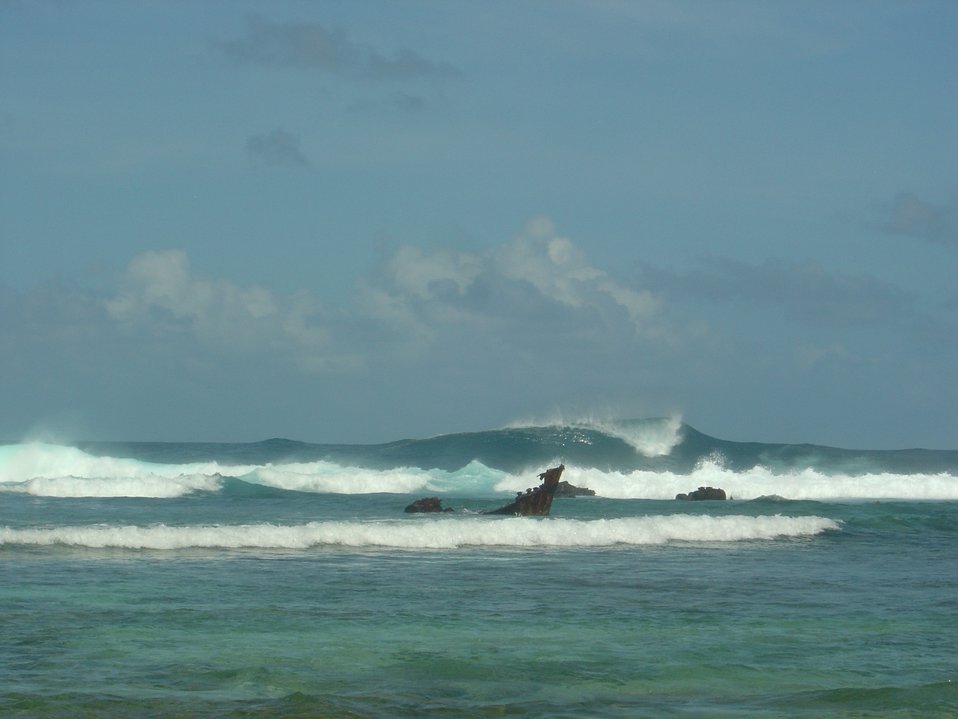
Annuu shipwreck seen in the surfline as large waves pummel the reef.